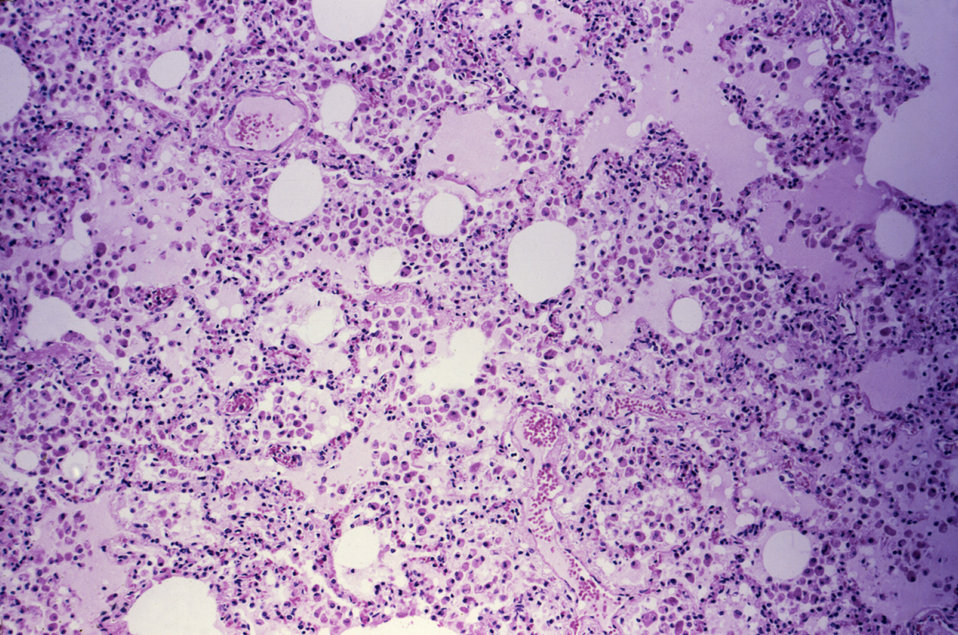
This photomicrograph revealed the cytoarchitectural histopathologic changes detected in a lung biopsy tissue section from a Marburg patient (case #1) who was treated in Johannesburg, South Africa, 1975.